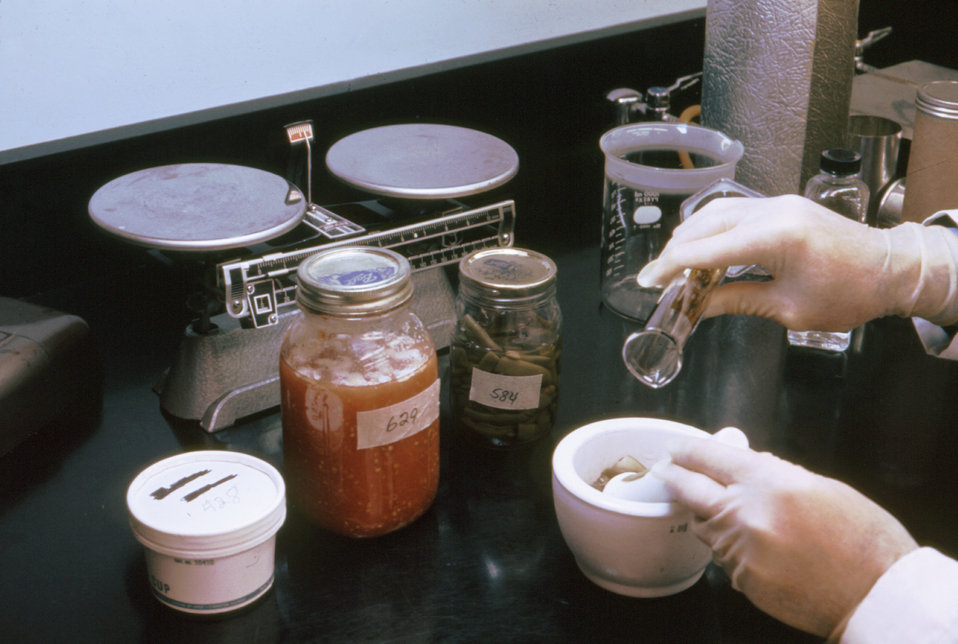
This lab technician is grinding food with a mortar and pestle from which botulinal toxin will be extracted.